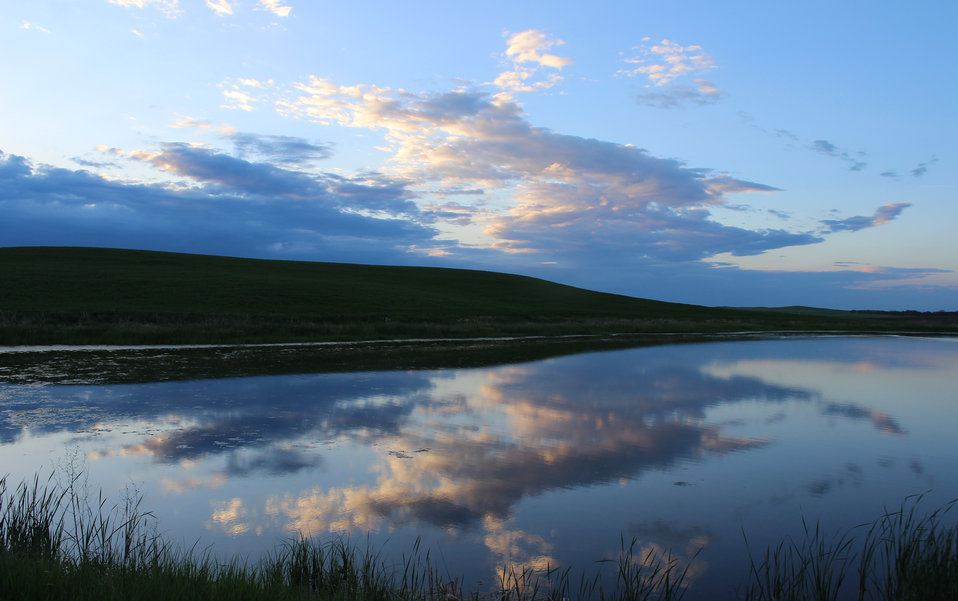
Still Waters

The still waters of this wetland reflect cloud formations in Logan County, North Dakota.